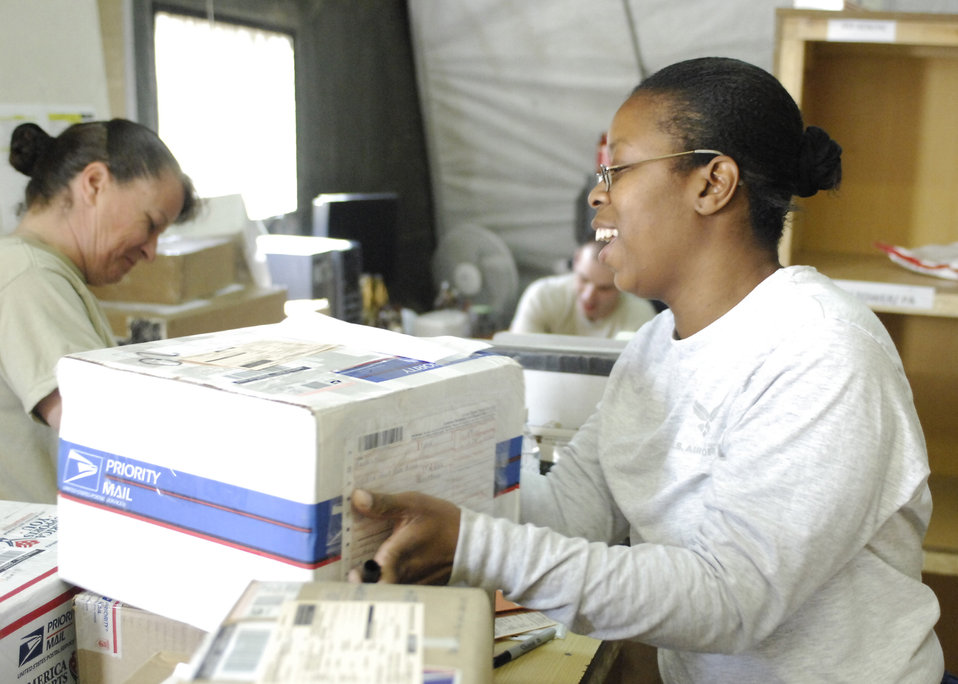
Recommended holiday mailing dates released for Afghanistan

Staff Sgt. Shervon Greenhow helps sort mail at the Air Force mail center Oct. 22, 2009, in Camp Cunningham, Afghanistan. Sergeant Greenhow is assigned to the 455th Expeditionary Communications Squadron and is deployed from Andrews Air Force Base, Md. She is a native of Savannah, Ga.